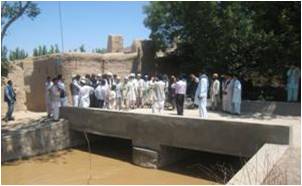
Saywoshan Handover Ceremony